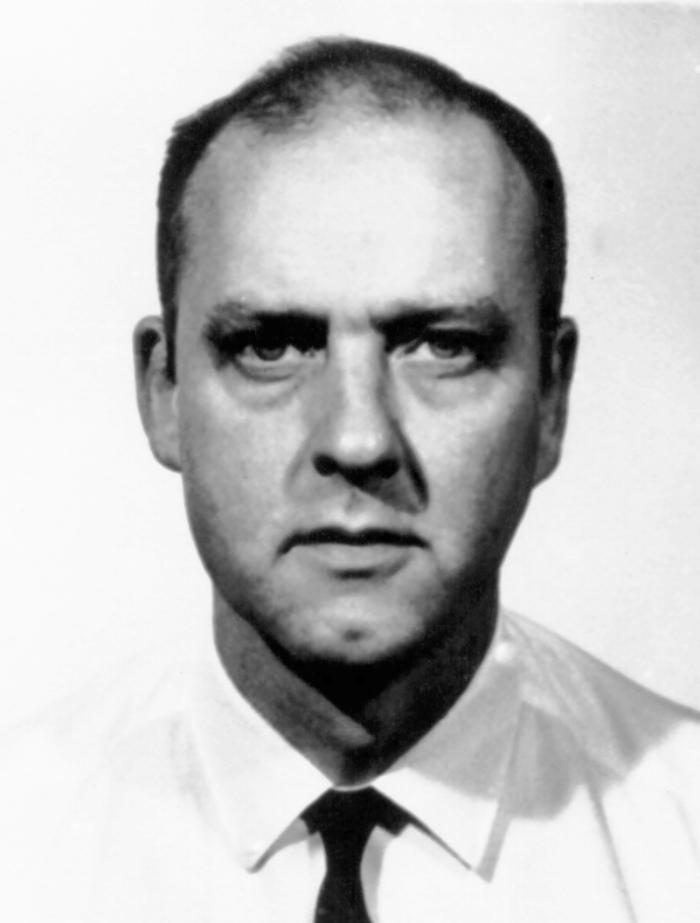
Michael B. Gregg, M.D. (1930 - 2008)